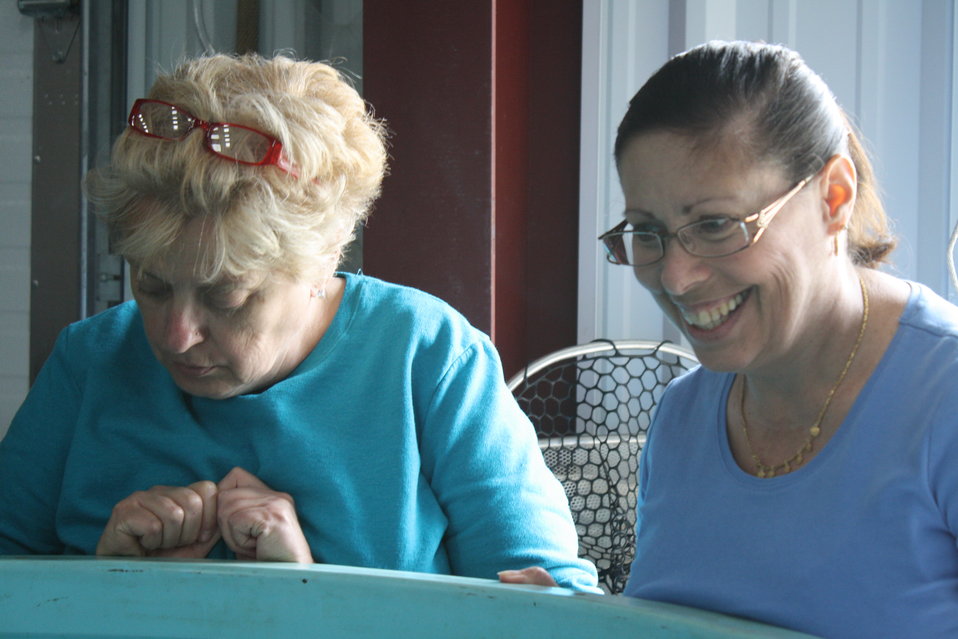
Nashua National Fish Hatchery welcomes regional office employees

Viewing salmon fry.